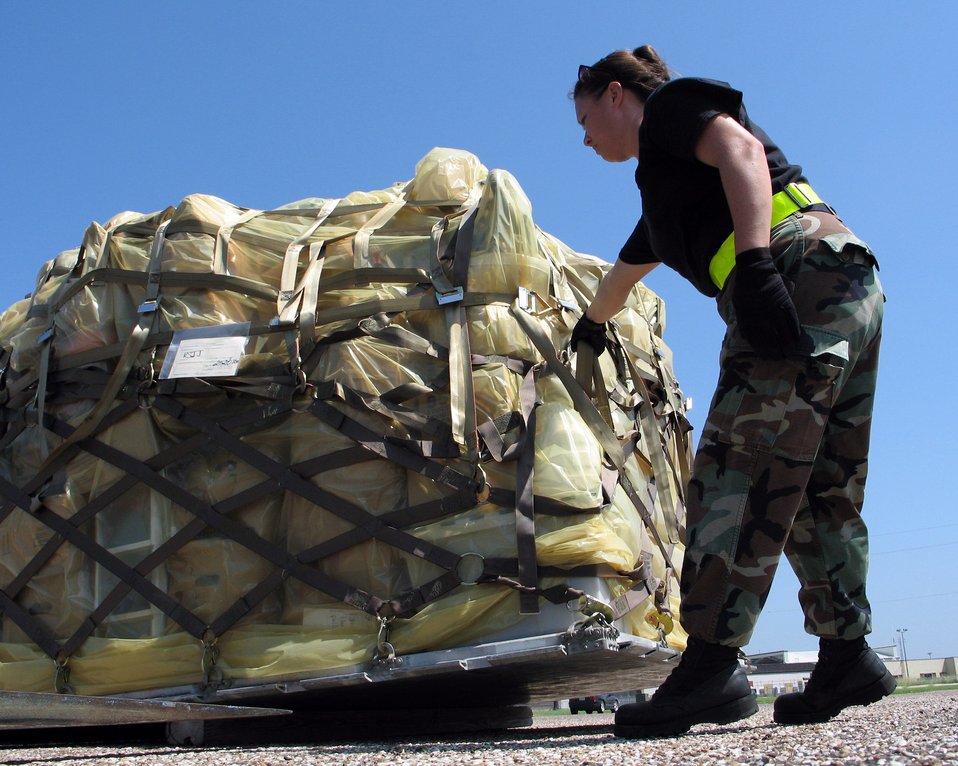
Hurricane Rita Humanitarian Assistance

ELLINGTON FIELD, Texas -- Staff Sgt. Colleen Jenkins guides a pallet of relief supplies into place for use in the Hurricane Rita relief effort here. The supplies, moved Sept. 26, were donated by the Missouri Air National Guard. Sergeant Jenkins is an air transportation journeyman with the 136th Aerial Port Squadron at Naval Air Station-Joint Reserve Base Fort Worth, Texas.